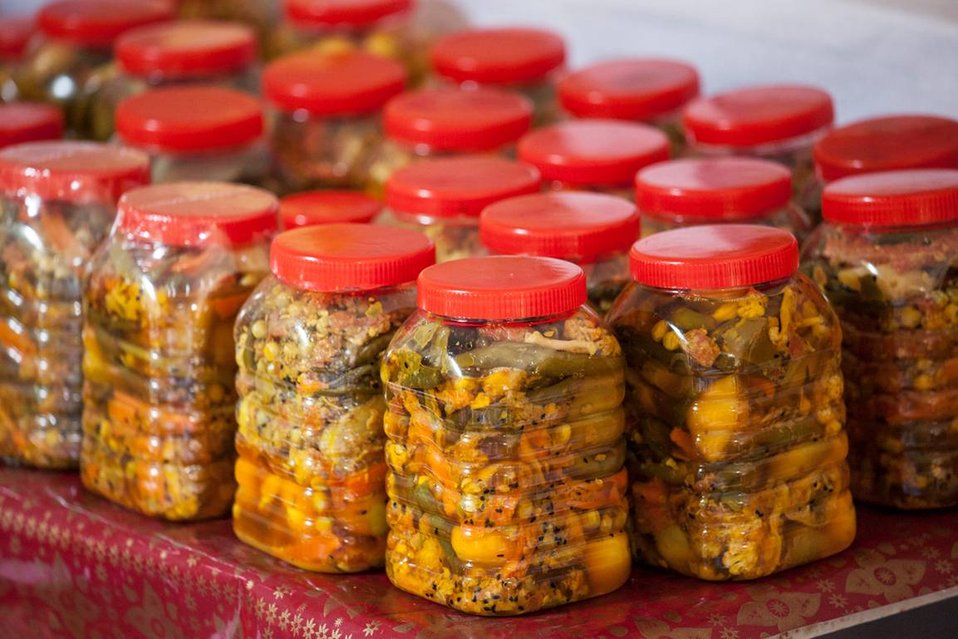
USAID's Agribusiness Project Women FEG for Food Processing - Pickle Production at Village Jabbi

Finally, the women will be trained in marketing and distribution, and provided with equipment and materials to get their business off the ground.
www.usaid.gov/pk/db/sectors/growth/project 750.html